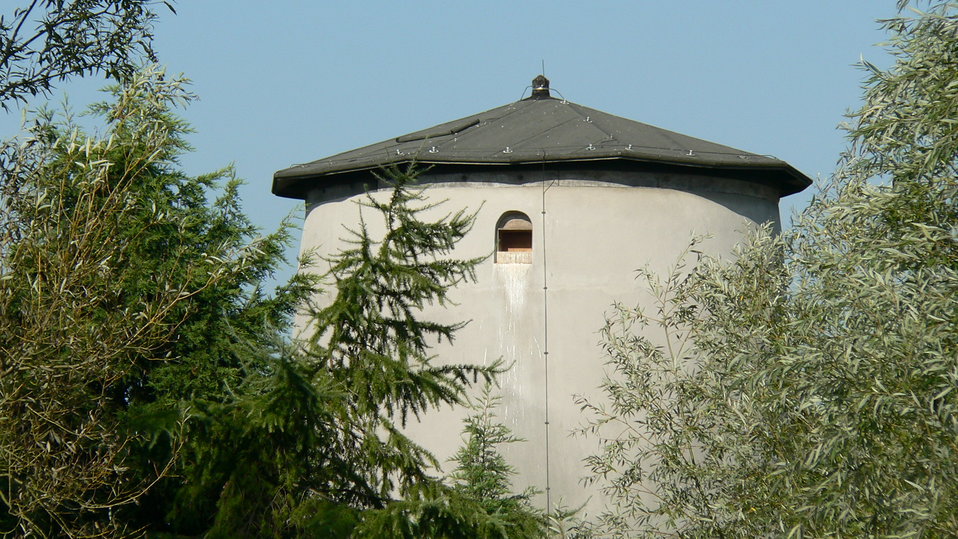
Babbersmolen langs de Poldervaart in Schiedam. Ingezoomd vanaf de oever van de Poldervaart op het restant van de Babbersmolen.